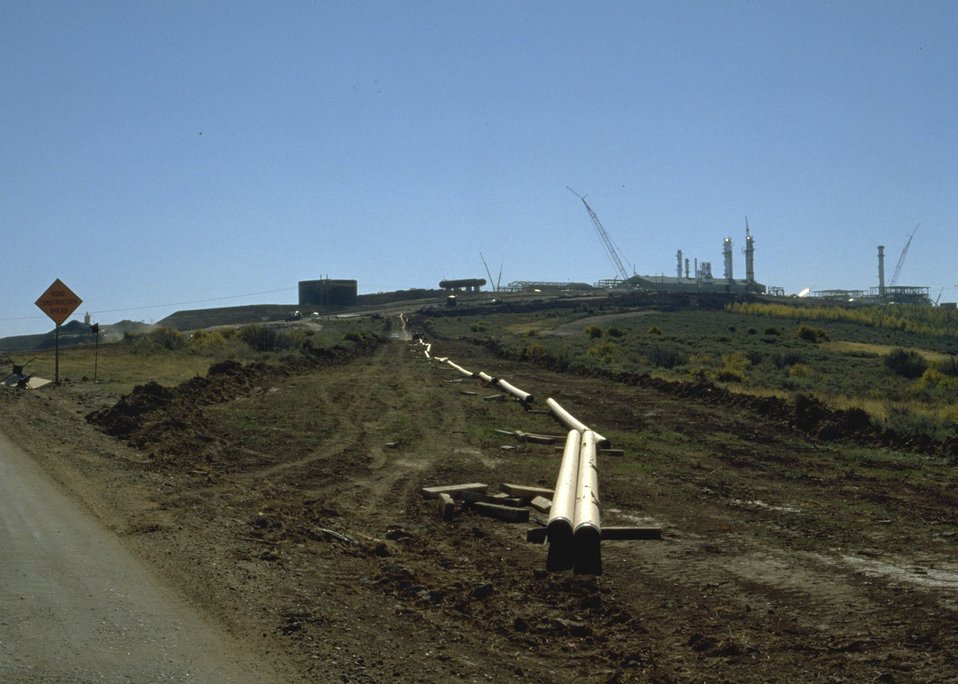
Construction for coal bed methane development.